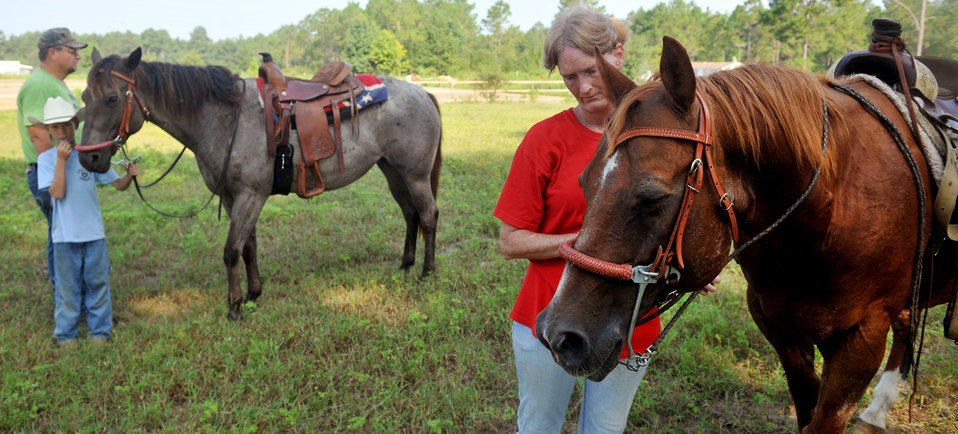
Horsebackriding treats PTSD

Maj. Laurie Abney prepares Sarge, a riding horse, for a ride around the training field at the Hopes and Dreams Riding Facility July 31, 2010, in Quitman, Ga. The riding facility is geared toward helping individuals with brain trauma and those who struggle with post-traumatic stress disorder. Major Abney is the 23rd Medical Group education and training flight commander.